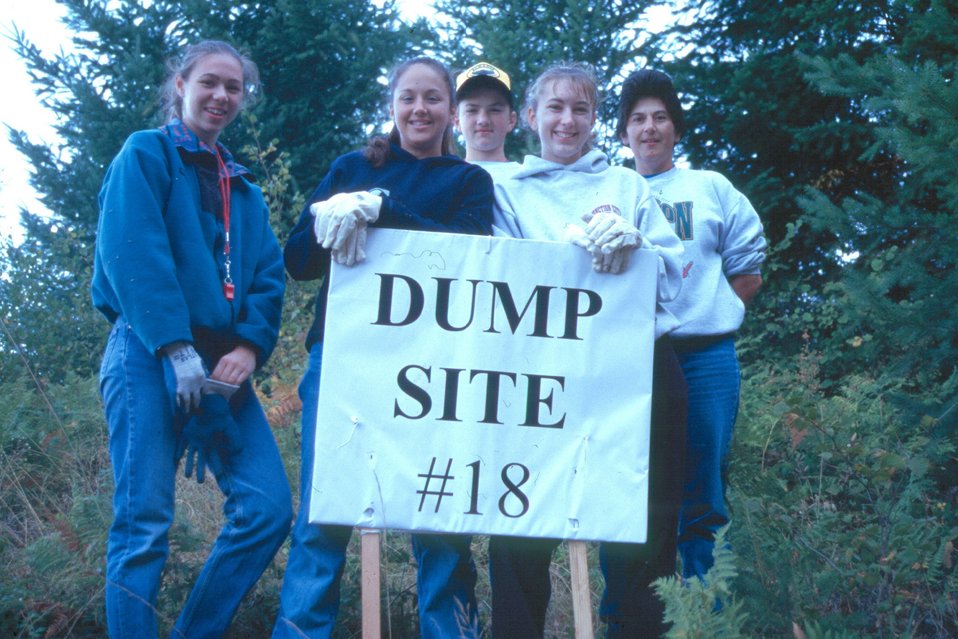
Junction City Scout Troupes,#203 & 334, after cleaning up dump site #18